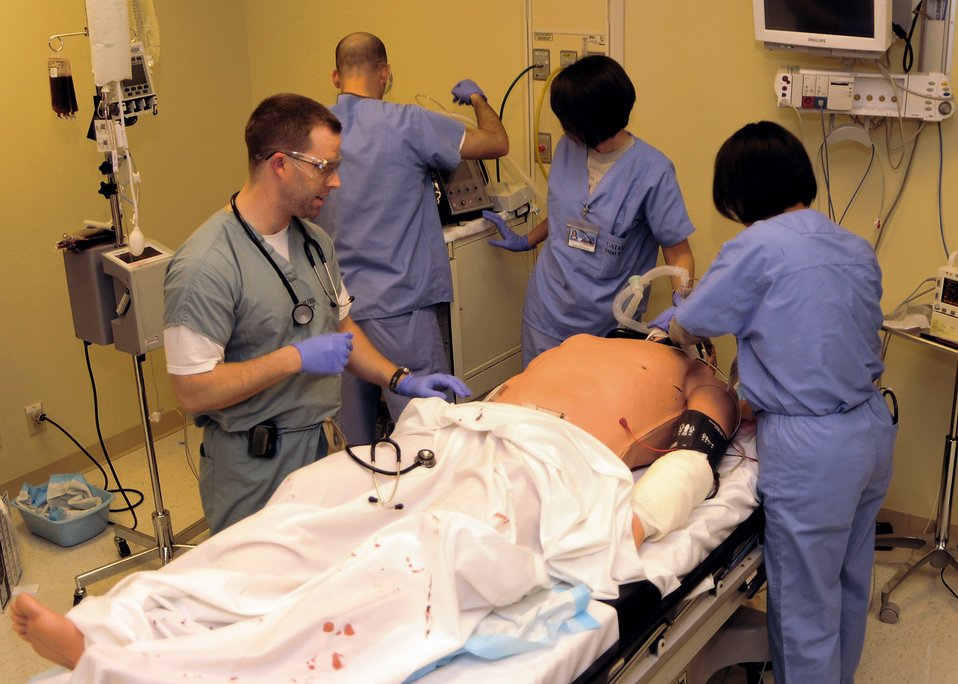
Training gives medics confidence prior to deployments

Students train in a real-time simulation that will help them prepare for their upcoming deployments Feb. 17 at the St. Louis University Hospital in Missouri. The simulators used in the training program are the latest patient simulation technology that are able to speak, breathe, bleed and can be administered medication that will affect their vital signs.